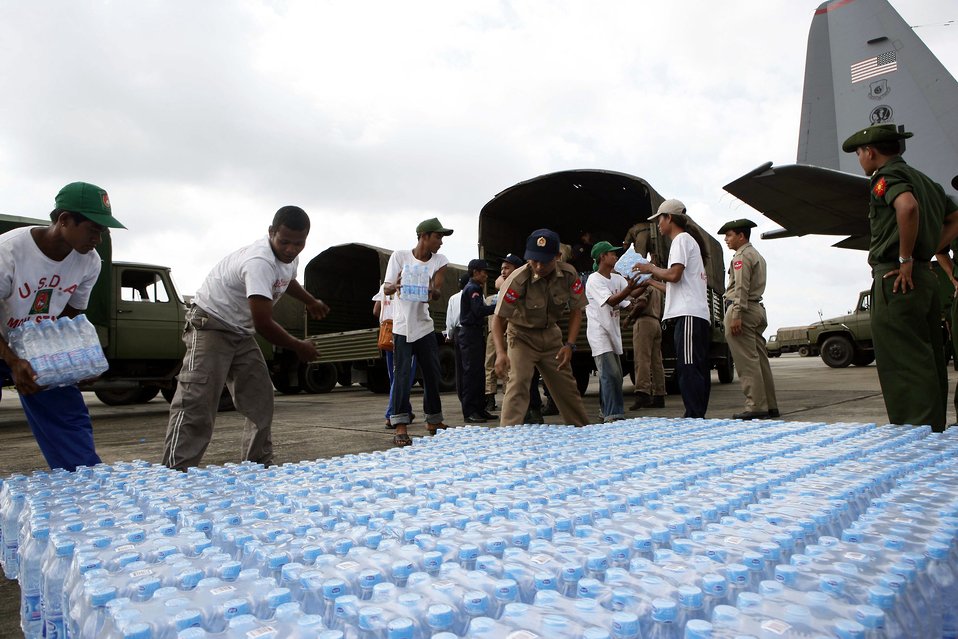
First C-130 crew provides humanitarian assistance to Burma

Burman servicemembers and civilian aid workers stage and count the water offloaded from a U.S. Air Force C-130 Hercules May 12 at the Yangon International Airport . The plane carrying water, food and medical supplies provided relief to Burma, which was struck by Cyclone Nargis May 2.